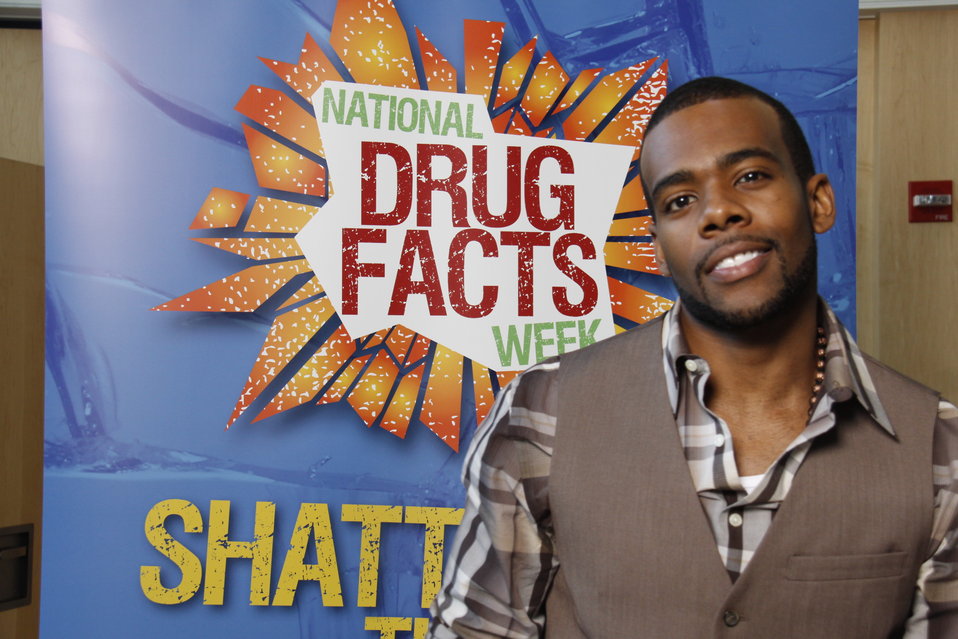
NDFW Mentor Event